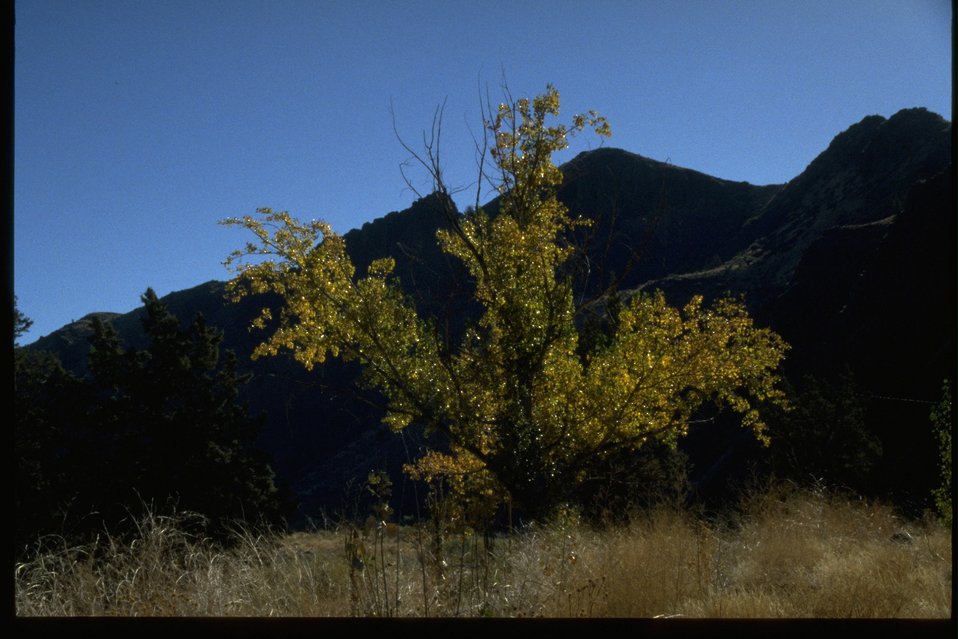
Lone cottonwood tree along the John Day River near Bridge Creek.